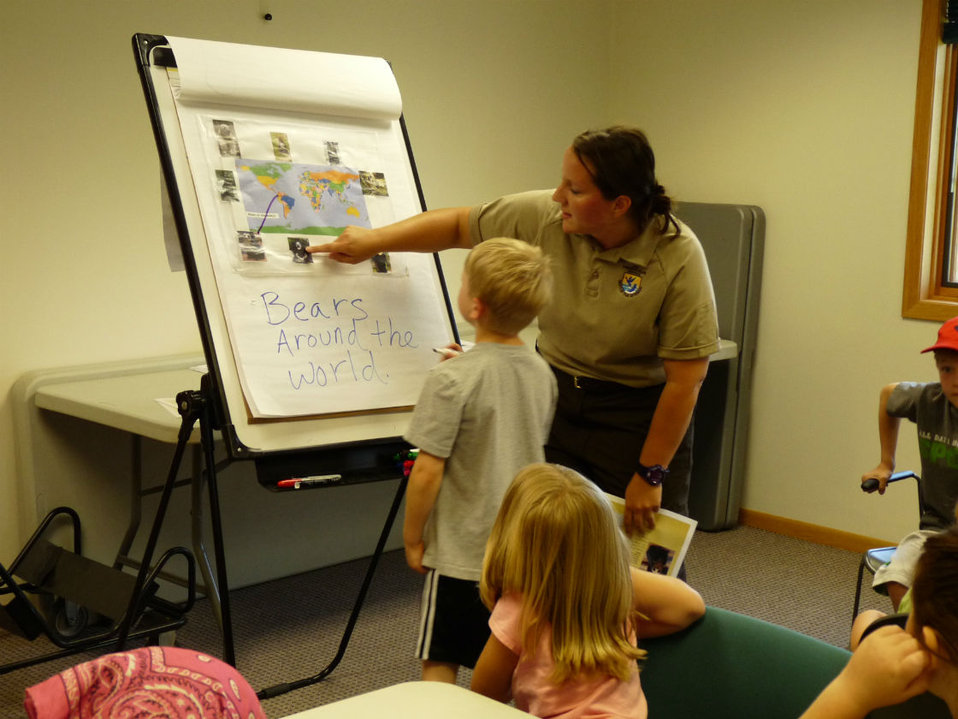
SCEP Intern Laurel Heino teaching about Sloth Bears

SCEP intern Laurel Heino helps a young fellow locate the native range of the sloth bear.